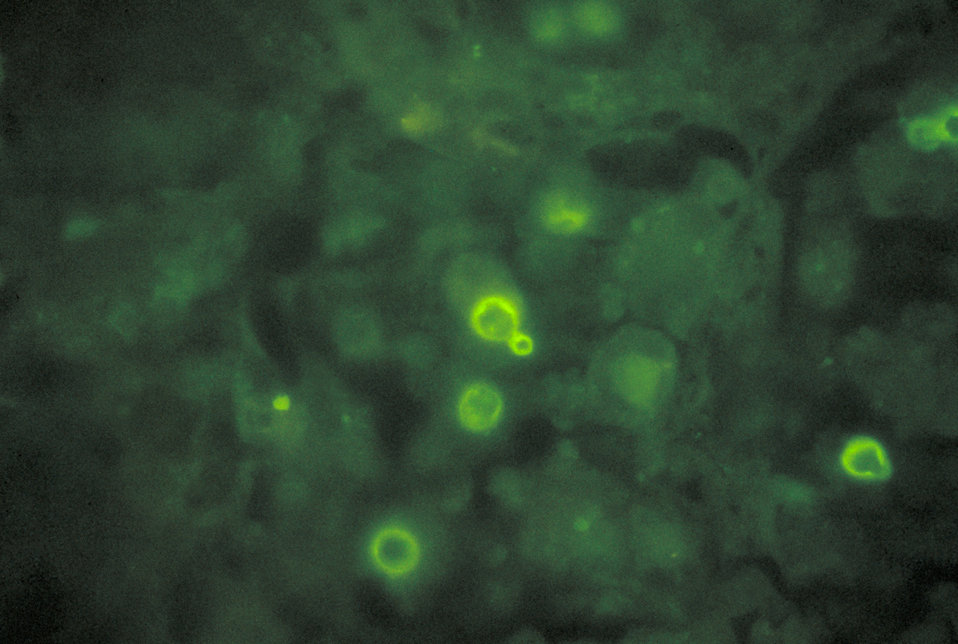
Direct FA stain revealing the histopathology of lung tissue blastomycosis due to the organism Blastomyces dermatitidis.